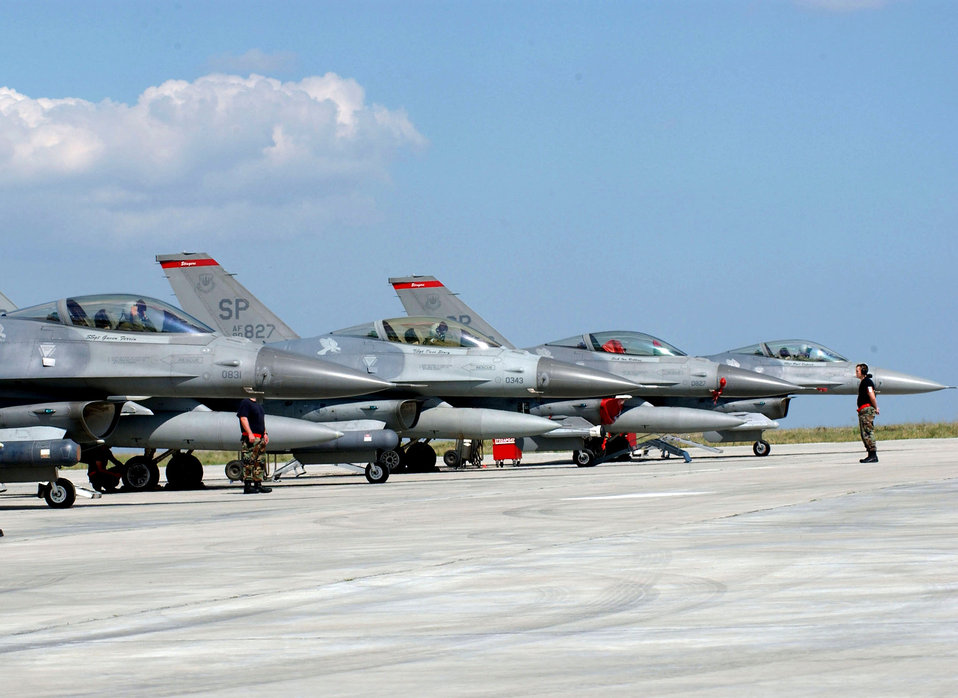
Viper Lance 2006

F-16 Fighting Falcons from Spangdahlem Air Base, Germany, stand ready for their first exercise mission against Romanian air force MiG 21 Lancers at Exercise Viper Lance 2006 at Mihail Kogalniceanu Air Base, Romania, on Aug. 9. This is the first time F-16 crews have trained in Romania.